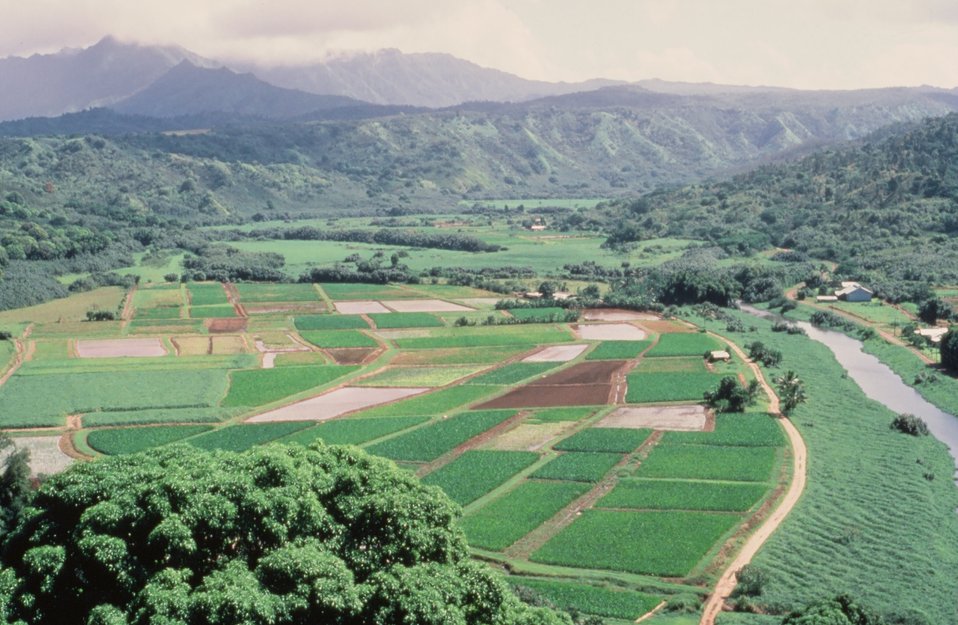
Aerial - Hanalei NWR

Overlooking the Hanalei National Wildlife Refuge in the distance.